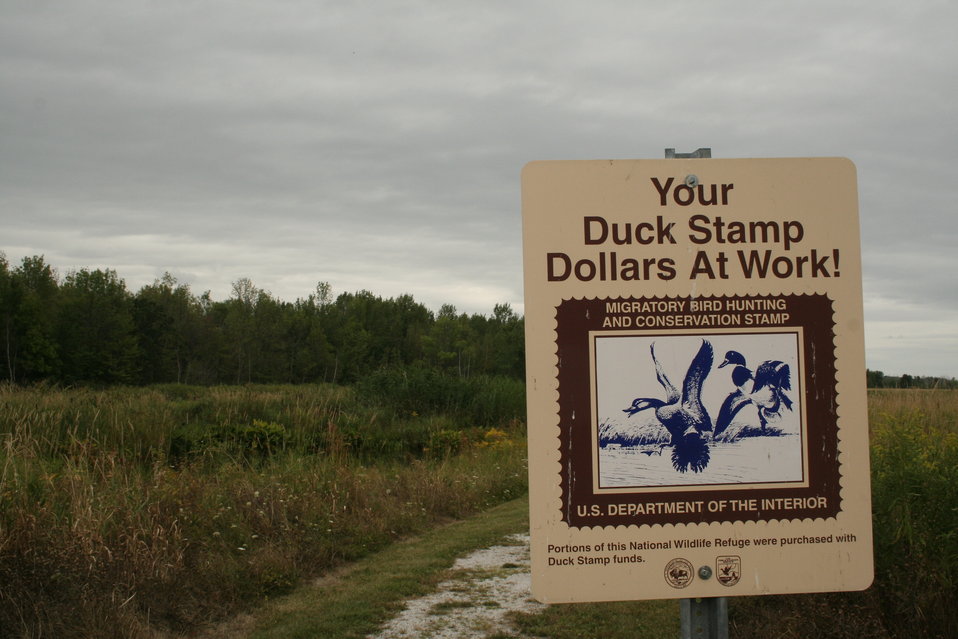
Missisquoi NWR

Missisquoi National Wildlife Refuge.